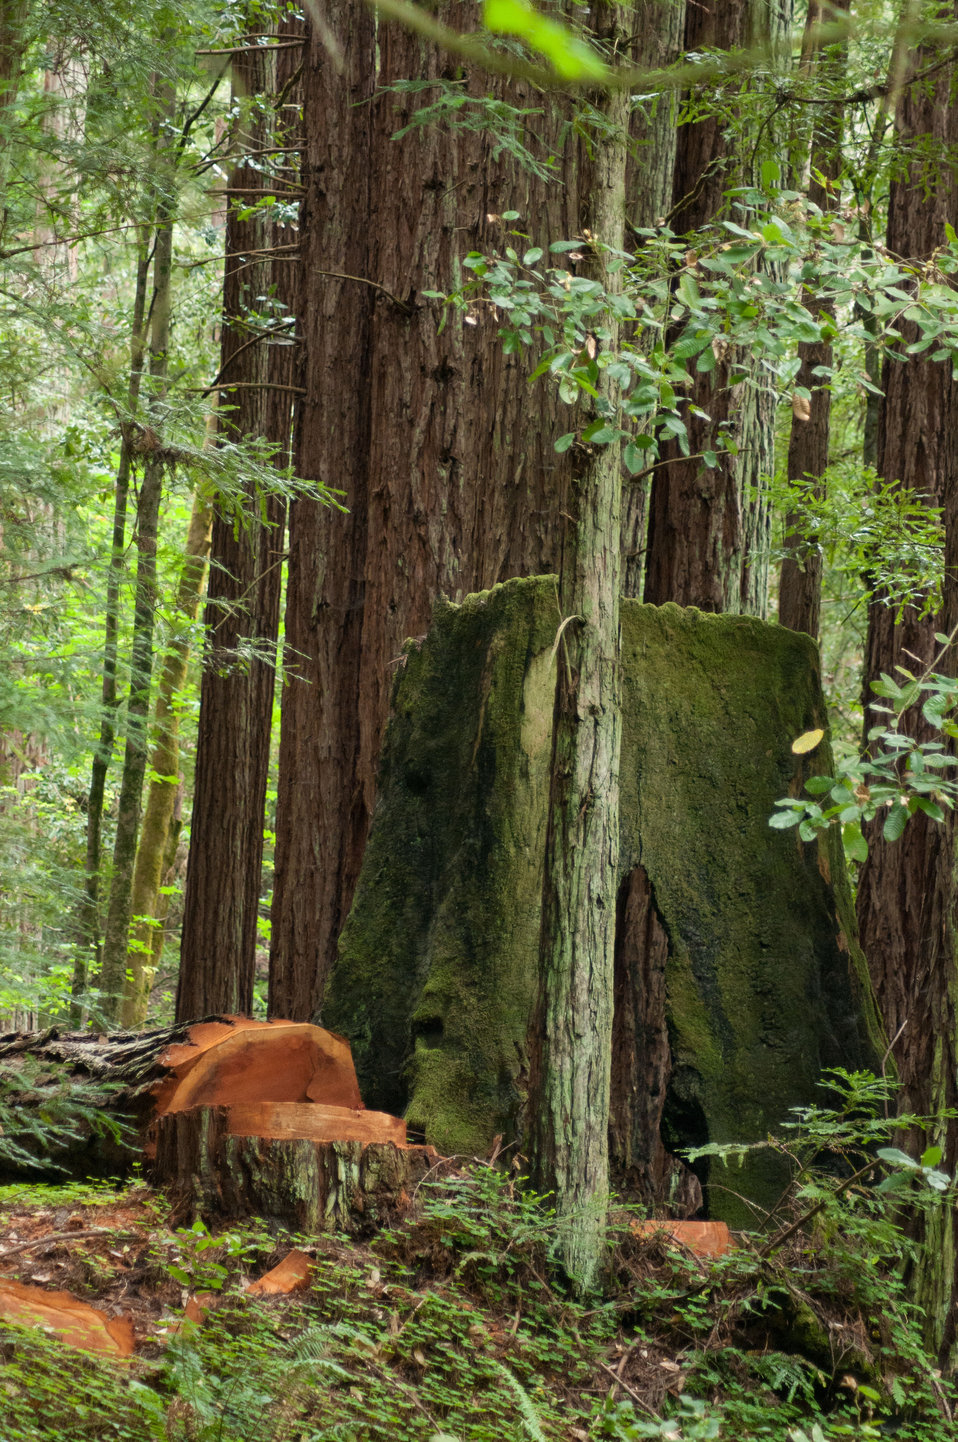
Good gardeners know that to manage a garden, plants must sometimes be thinned or removed for the health of the garden. In this case a landowner has determined these redwoods needed to be cut down to provide better health for the smaller trees and plants in this area of a private forest in Santa Cruz County, CA, on Friday, June 17, 2011. This type of growth can provide increased silt and sediment retention during heavy rains that can flow into the Monterey Bay. These Redwood trees have grown in a cathedral ring, a group of redwoods that grow in a circle around a host stump (covered with green moss), from which they sprouted. The host tree, met its demise hundreds of years ago. Assisting landowners when they want support in the management of their private forest is a factor in the America’s Great Outdoors Initiative (AGO).